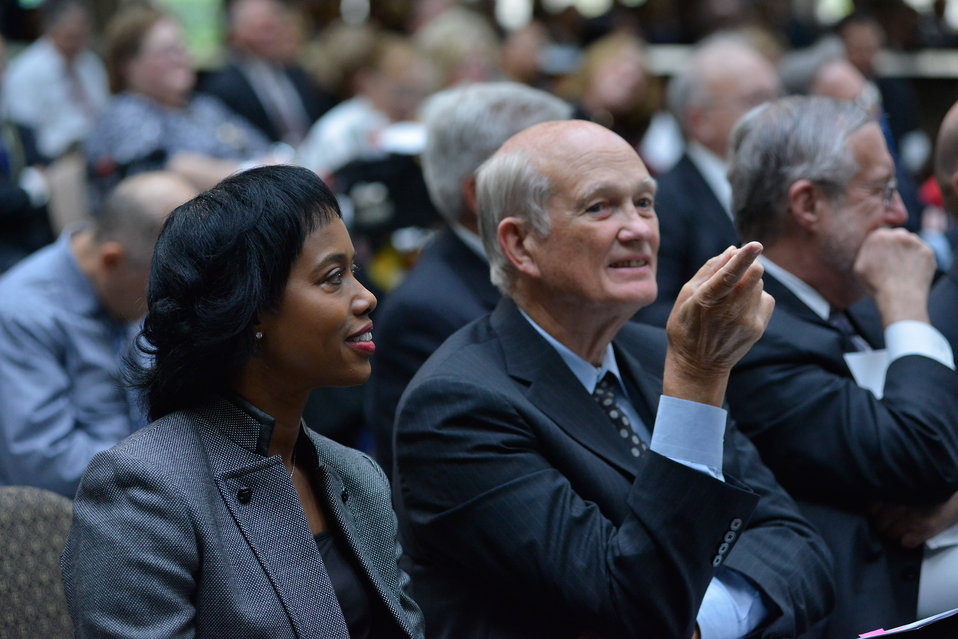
Senior Staff

Senior Department of Energy staff attended and presented the Secretarial Honors Awards during the October 4 event. Here, Dot Harris, Director of the Office of Economic Impact and Diversity, sits with Dr. Bill Brinkman, Under Secretary for Science (Acting) and Director of the Office of Science, and Dr. Peter Lyons, Assistant Secretary of Energy, Office of Nuclear Energy.